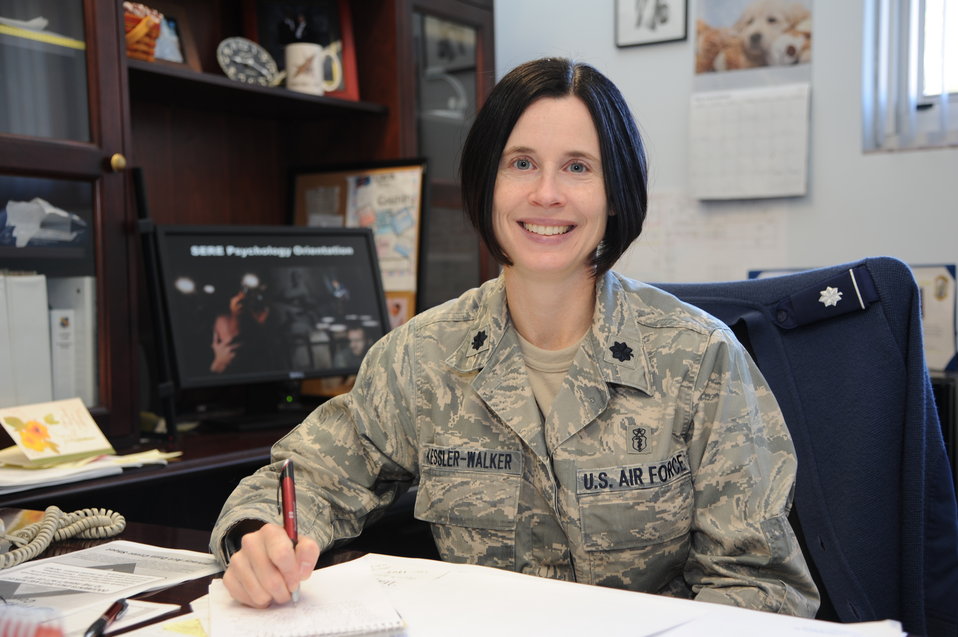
A bit of a challenge

Lt. Col. Dawn Kessler-Walker, 4th Medical Operations Squadron (MDOS) commander, poses for a photo at the 4th Medical Group clinic on Seymour Johnson Air Force Base, N.C., Nov. 8, 2011. Kessler-Walker is directly responsible for health care and prevention services to over 12,000 Tricare Prime enrollees in family medicine, pediatrics, women's health, physical therapy and mental health. Among her primary duties she is also a licensed psychologist and continues to see patients in the mental health clinic.